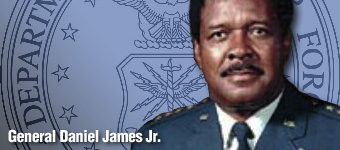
General Daniel James Jr

Gen. Daniel "Chappie" James Jr. history spotlight graphic, U.S.